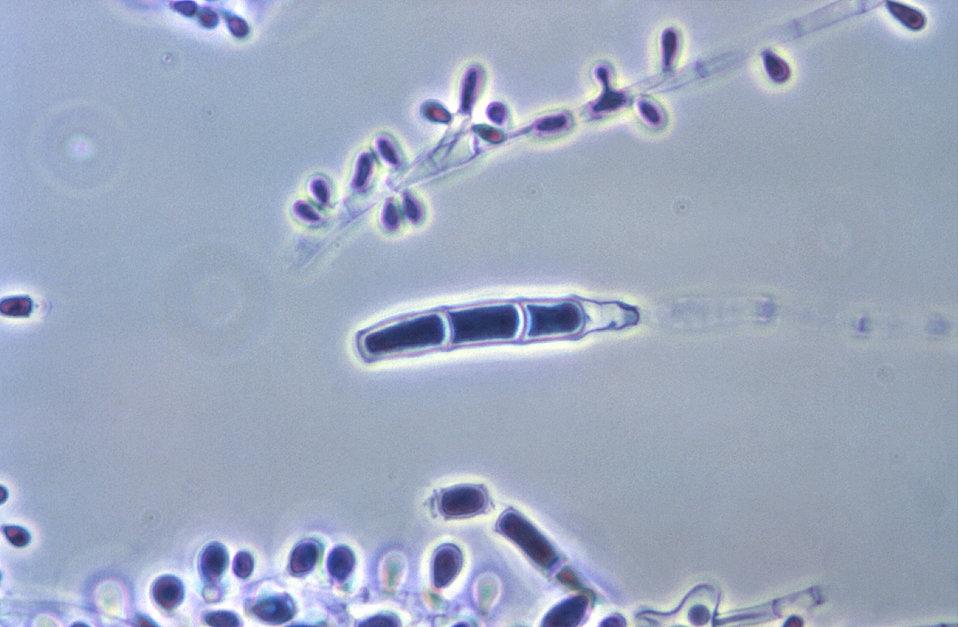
Magnified 1000X, this photomicrograph revealed some of the ultrastructural morphology exhibited by this dermatophytic fungus, Trichophyton rubrum. Of particular interest in this image are the macroconidia that were budding from the multiseptate conidiophores, as well as a centrally-located multiseptate macroconidum.